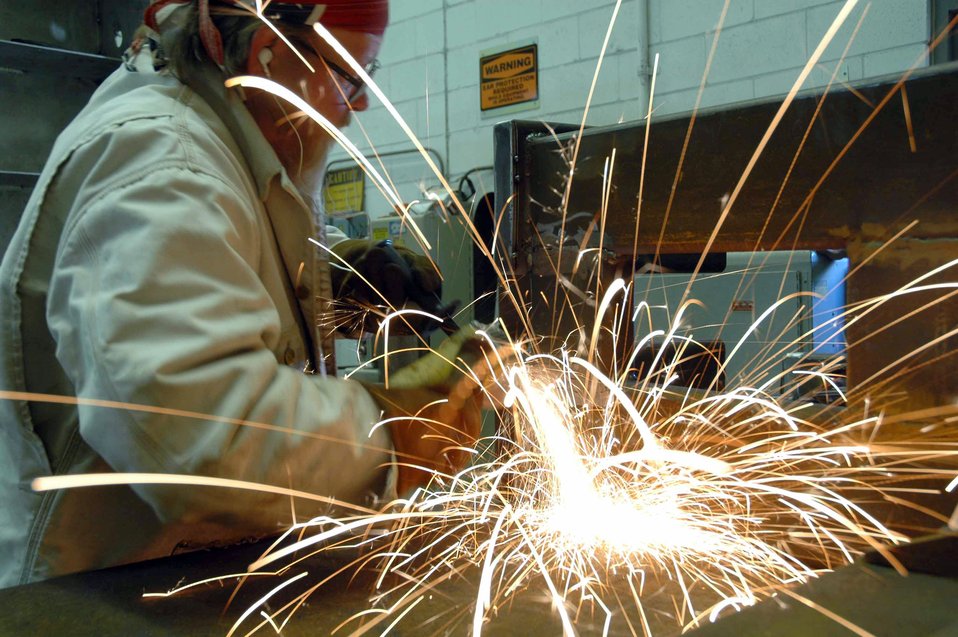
Small office comes up big

EGLIN AIR FORCE BASE, Fla. (AFPN) -- Danny Franklin grinds a piece of metal for an MK-84 container loading adapter designed by the munitions materiel handling equipment focal point. They support the Air Force armament and munitions community with the development of munitions support equipment, designing and fabricating tools to make life on the flightline easier for munitions Airmen. Mr. Franklin is with the 46th Test Wing Fabrication and Installation team.